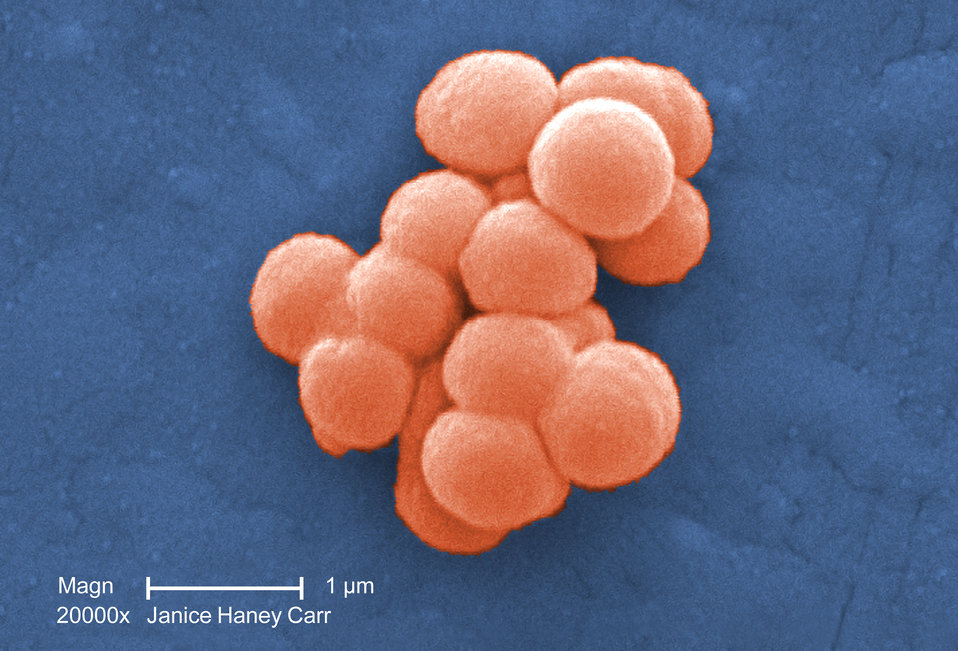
Under a high magnification of 20,000X, this colorized scanning electron micrograph (SEM) revealed a small clustered group of Gram-positive, beta-hemolytic Group C Streptococcus sp. bacteria. See PHIL 10585 for a black and white version of this image.